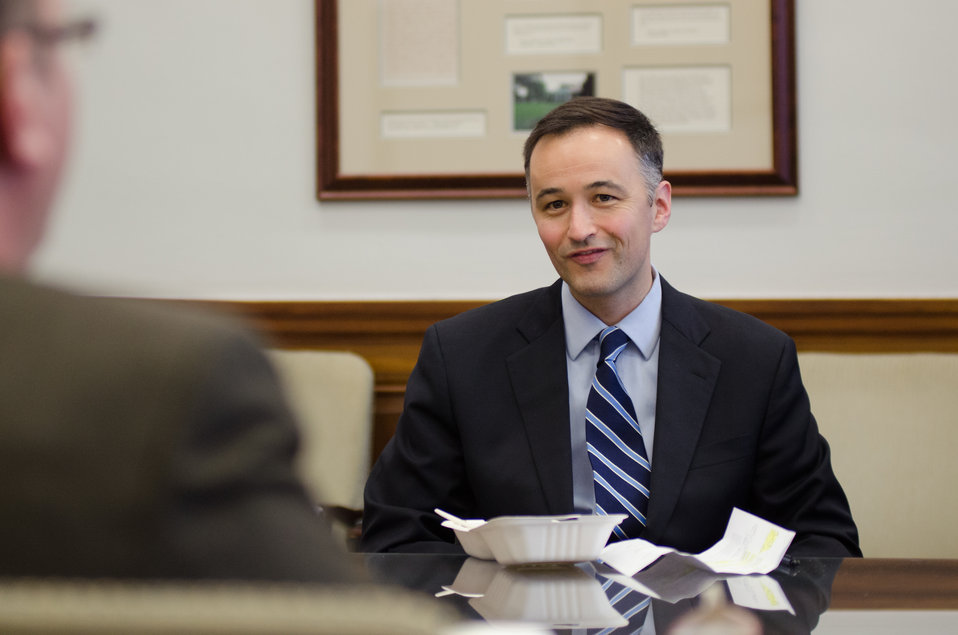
U.S. Department of Agriculture (USDA), Foreign Agricultural Service Senior Advisor Patrick Kerrigan, right, listens to Office of Ethics Branch Chief Ed Peterman, left, during a Brown Bag Lunch with Secretary Vilsack. The Secretary has periodic get togethers with employees, in his conference room, on Tuesday, April 9, 2013, in Washington, D.C.